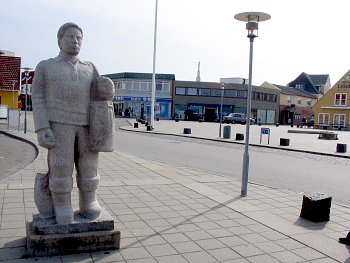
H1 ubt